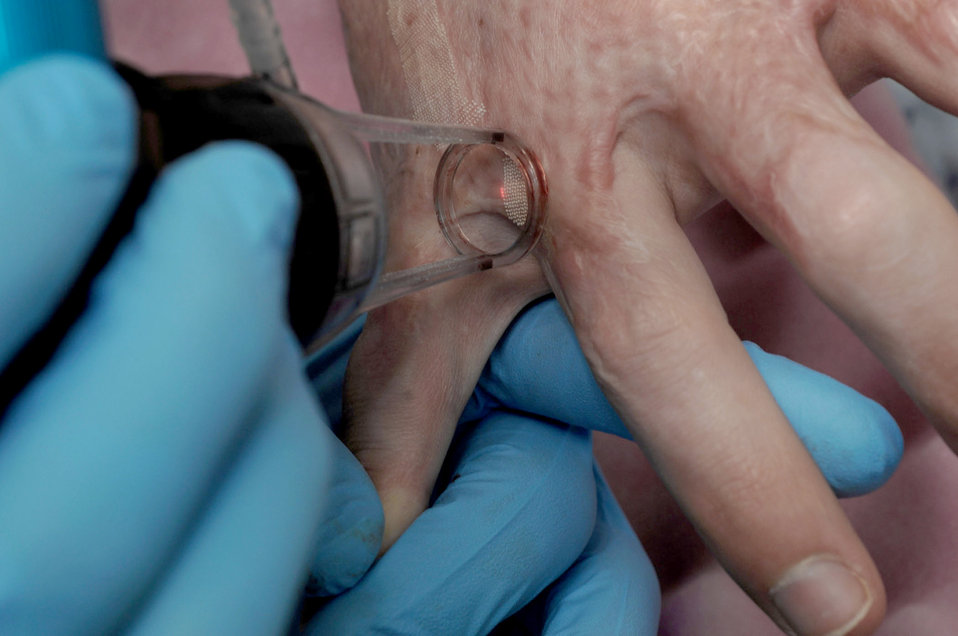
Grant approved for burn victim research

Lt. Col. (Dr.) Chad Hivnor uses a carbon dioxide fractional laser to help improve skin texture and flexibility on a wounded warrior's arm Sept. 24, 2010, at Wilford Hall Medical Center, Lackland Air Force Base, Texas. A grant was recently approved for Dr. Hivnor's research into the use of the laser treatments.